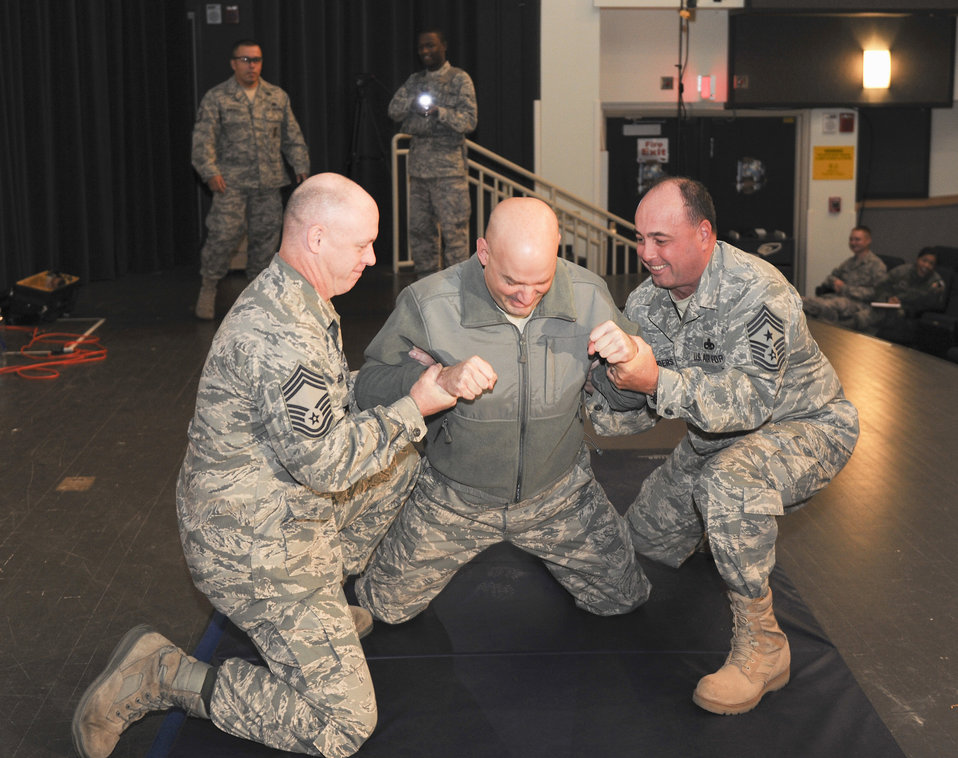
Tasers at Kunsan

Lt. Col. Mark Anarumo reacts to being shot in the back with a Taser during a demonstration Dec. 7, 2010, at Kunsan Air Base, South Korea. The Taser is the newest non-lethal-force asset option for security forces members to use to contain potentially harmful situations. Colonel Anarumo is the 8th Security Forces Squadron commander.